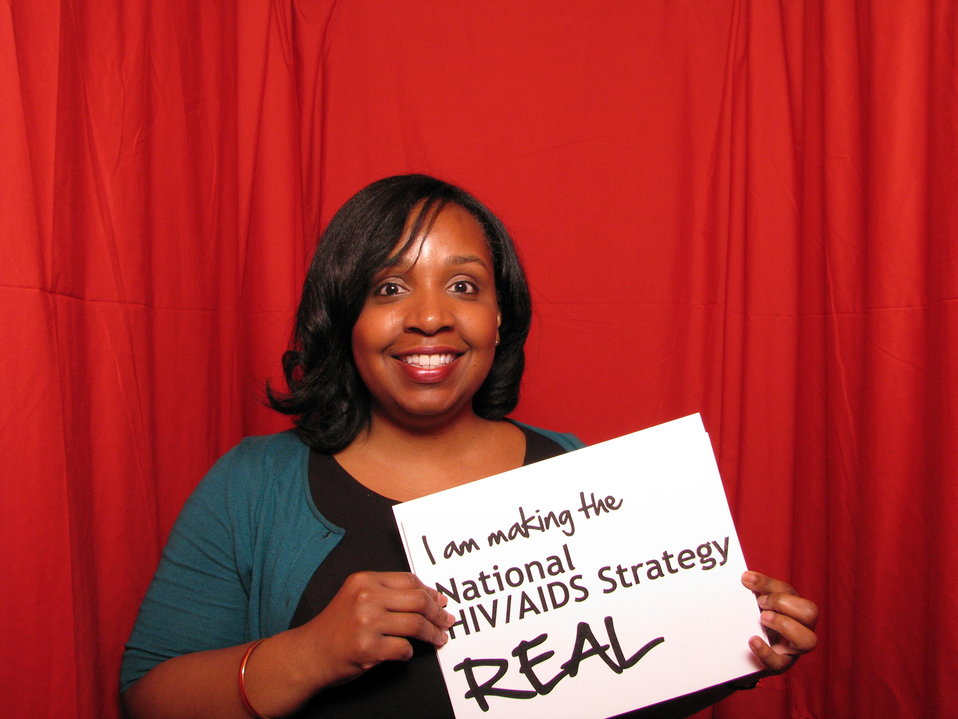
We are making the National HIV/AIDS Strategy REAL

From the AIDS.gov photo booth at the U.S. Conference on AIDS, September 2010 (Orlando, FL).